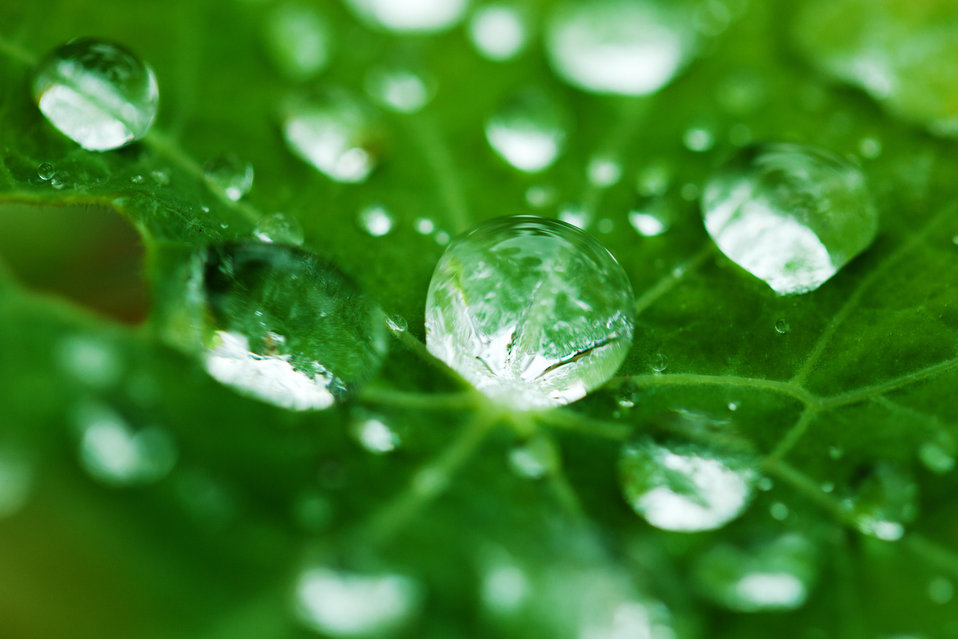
Dew on a leaf

Dew on a green leaf.